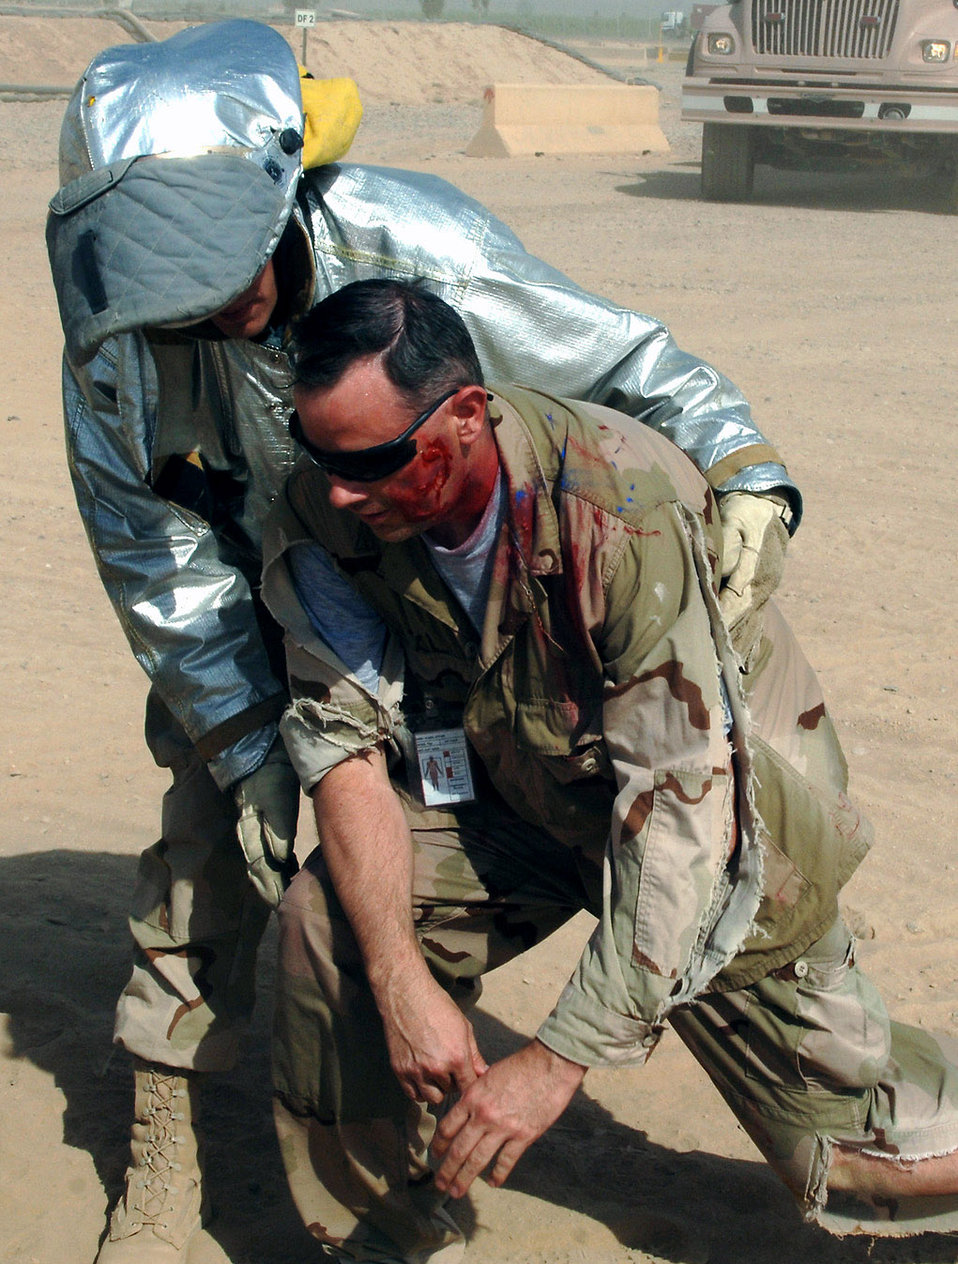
Practice makes perfect

Airman 1st Class Troy Falkena assists injured participants during a mass accident response exercise Aug. 11 at Joint Base Balad, Iraq. More than 100 Airmen and Soldiers participated in the joint exercise ensuring first responders are ready for any situation at any time. Airman Falkena, a firefighter with the 332nd Expeditionary Civil Engineer Squadron here, is deployed from Langley Air Force Base, Va.